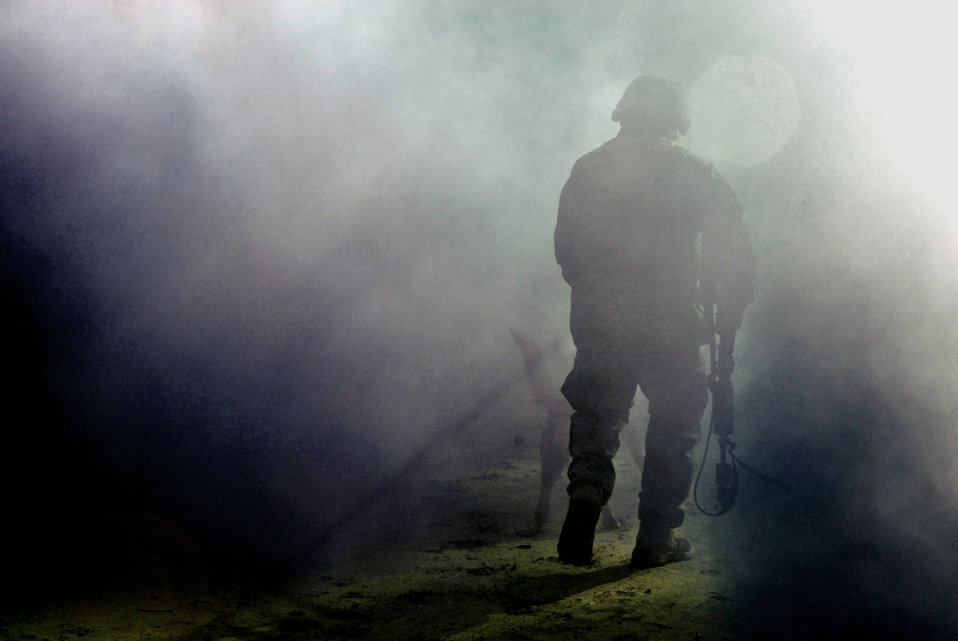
Step carefully

A student practices tactics for military operations in urban terrain training at Naval Air Engineering Station Lakehurst, N.J. Instructors at the U.S. Air Force Expeditionary Center at Fort Dix, N.J., prepare security forces Airmen for upcoming deployments with the Phoenix Warrior Training Course.